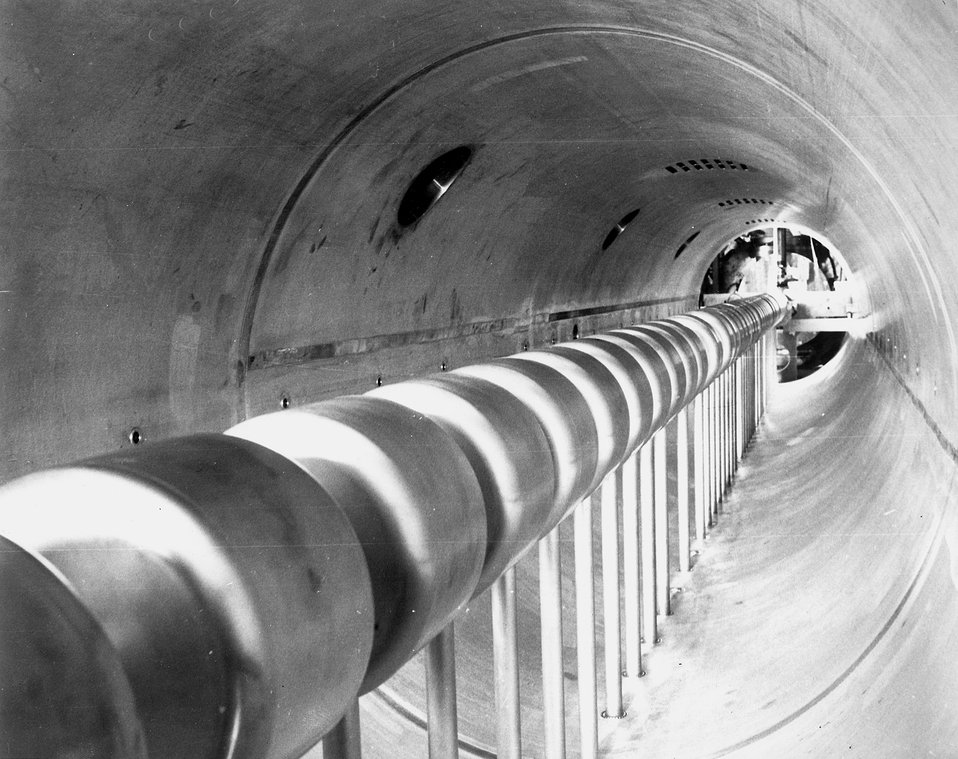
The 200 BeV Accelerator is undergoing construction. This photo shows the interior of the prototype 10 MeV. c.1970